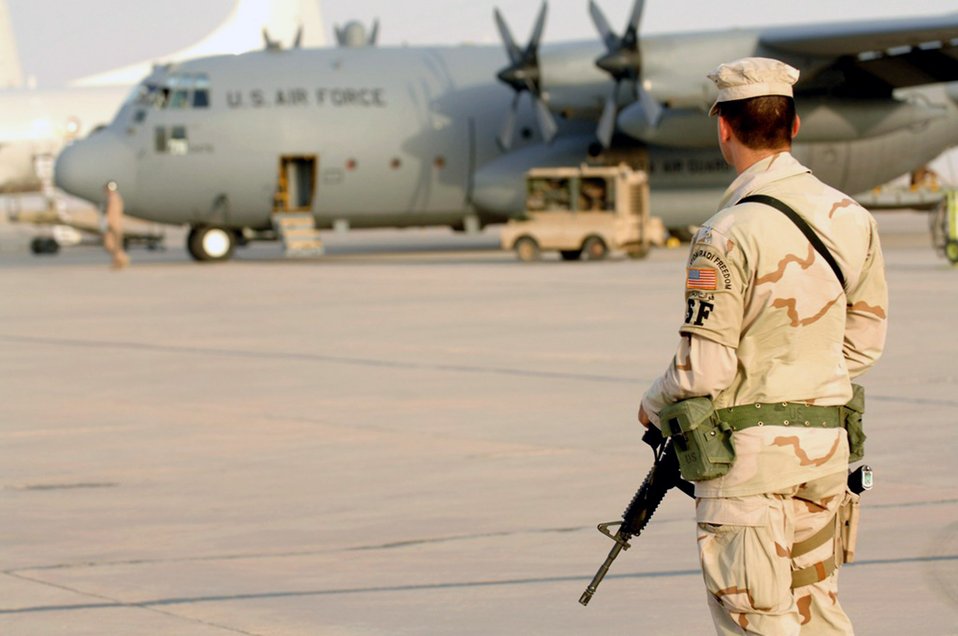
Keeping the compound safe

Airman 1st Class Morgan Constantino looks on as a C-130 Hercules crew begins their pre-flight inspection June 22 at Ali Air Base, Iraq. Airman Constantino, a member of the 407th Expeditionary Security Forces Squadron, is assigned to flightline defense, protecting U.S. and coalition assets from insurgent intelligence gathering efforts and attacks.